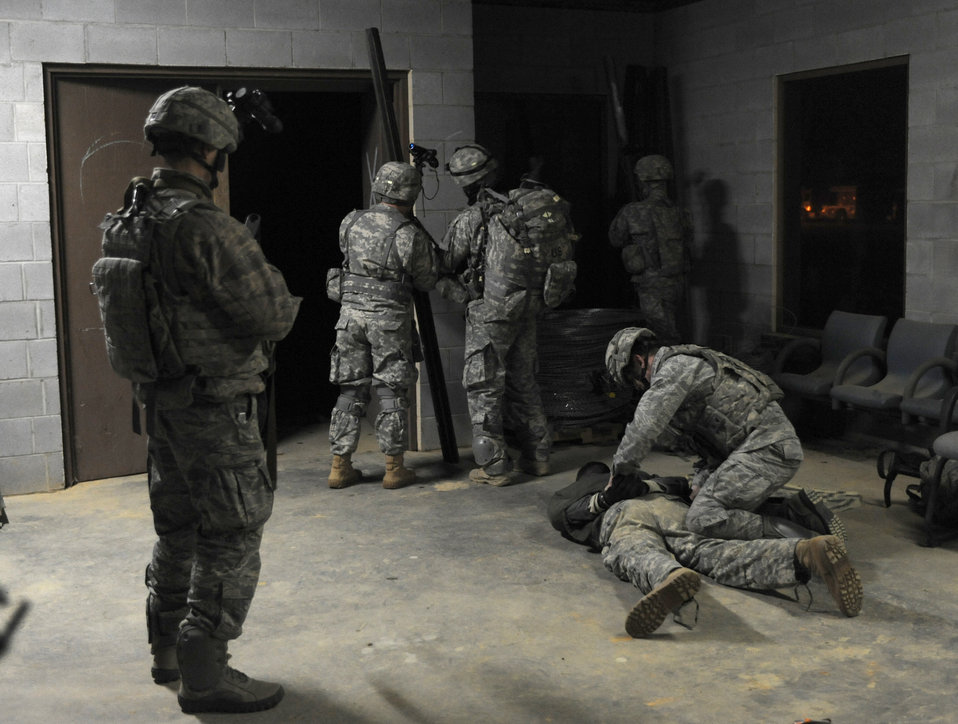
Soldiers with the Headquarters and Headquarters Company, 3rd Brigade Special Troops Battalion, 3rd Brigade Combat Team, 82nd Airborne Division, and Airmen from the 824th Base Defense Group work together in collecting and setting up a detainee control point during Joint Operations Access Exercise 12-01 in Fort Bragg, N.C., Feb. 12, 2012. During the exercise, Army and Air Force members jumped together and provided security along with helping to evacuate American citizens out of a hostile environment.